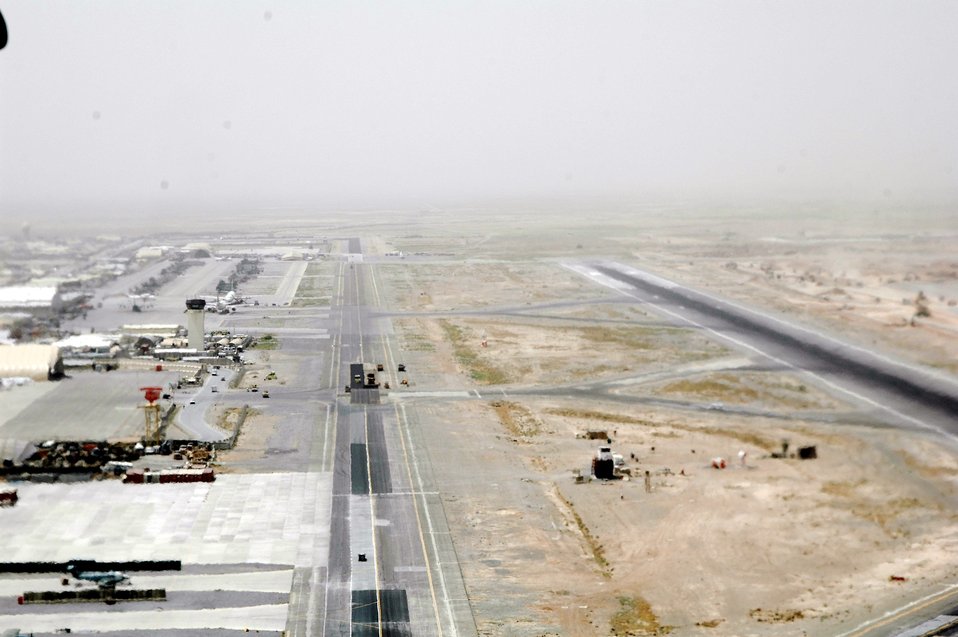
CODEL Berman